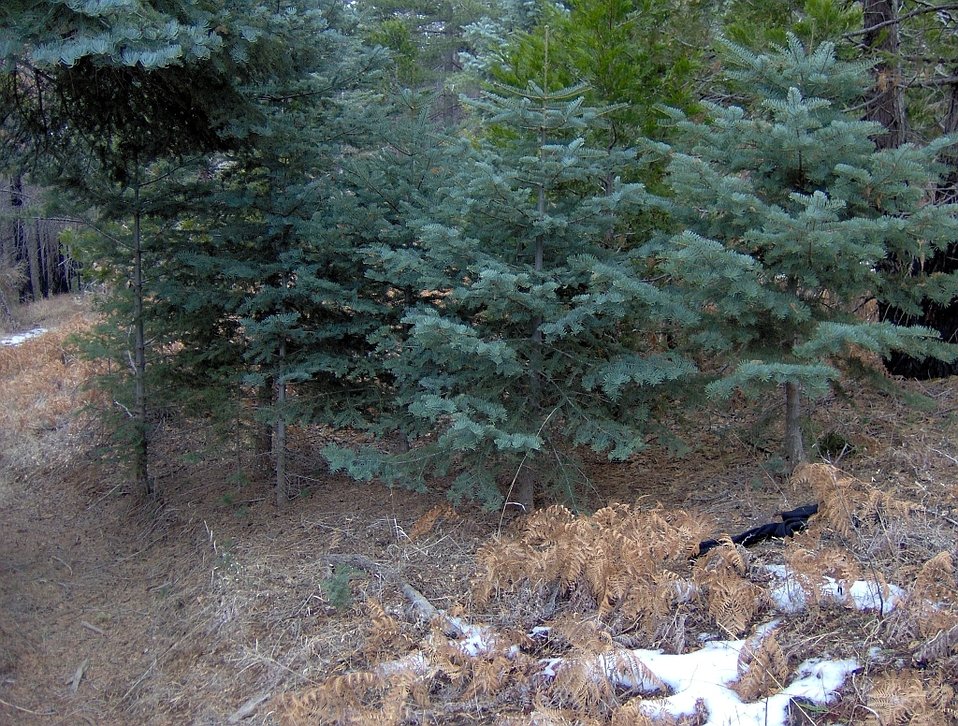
Taken January 28th, 2007 photo credit Tyler Finvold Cuyamaca Peak, White fir (Abies Concolor)